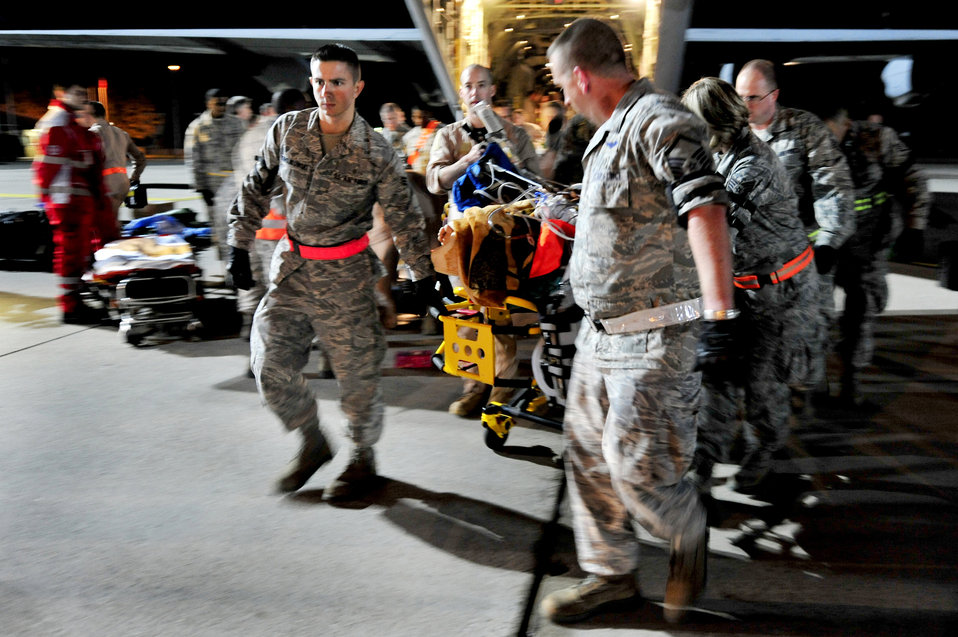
Airmen aid wounded Libyan fighters

Airmen from the 86th Aeromedical Evacuation Squadron and a critical care air transport team from Landstuhl Regional Medical Center load a wounded Libyan fighter onto a civilian aircraft for transport to a local German hospital Oct. 29, 2011, at Ramstein Air Base, Germany. At the request of the State Department and directed by the Secretary of Defense, U.S. Africa Command is supporting U.S. and international humanitarian relief efforts in Libya. Specifically, the U.S. military transported four wounded Libyans for treatment in medical facilities in Europe and 28 to facilities in the United States.